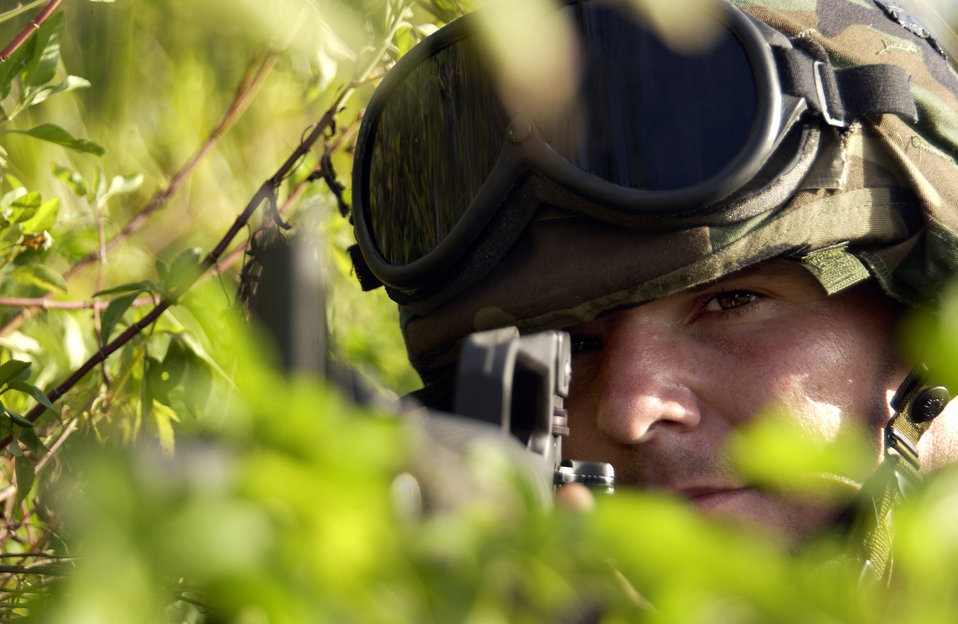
GIRRE

Senior Airman Vit Harwell takes position during the convoy and weapons familiarization training portion of the Guam Initial Readiness Response Exercise, or GIRRE, Tuesday, March 14, 2006. The GIRRE is an annual island-wide exercise between Andersen Air Force Base and Naval Marianas to train on war plan deployments and joint disaster response skills. During the GIRRE, 300 Air Expeditionary Force Airmen will participate under conditions they may see when deployed. The mission of this exercise is readiness and to prepare AEF Airmen with skills they can use to keep alive downrange while working with Navy and Government of Guam agencies on disaster response to save lives at home. Airman Harwell is with the 36th Civil Engineering Squadron.